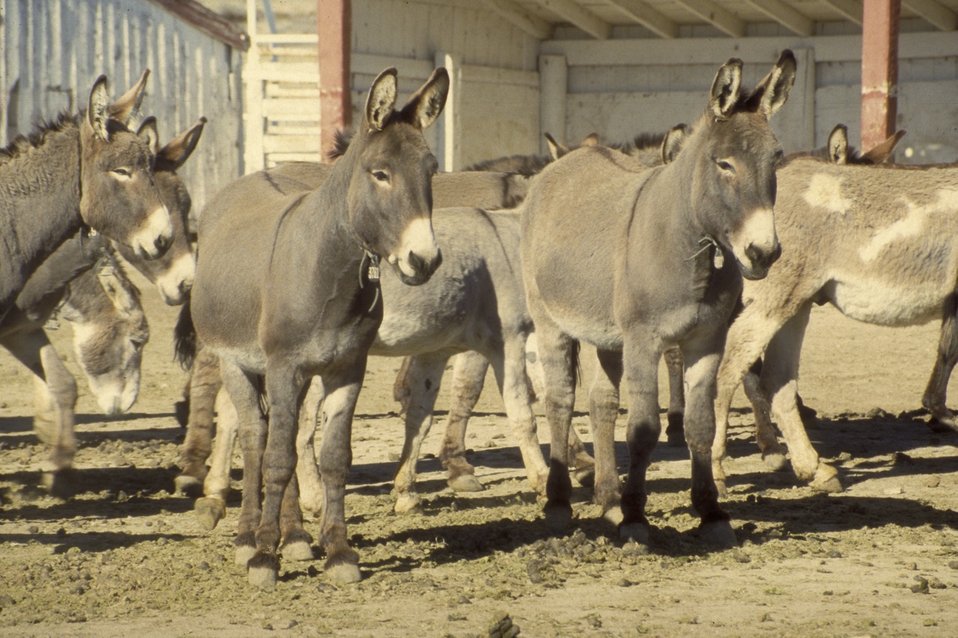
Burros awaiting adoption.